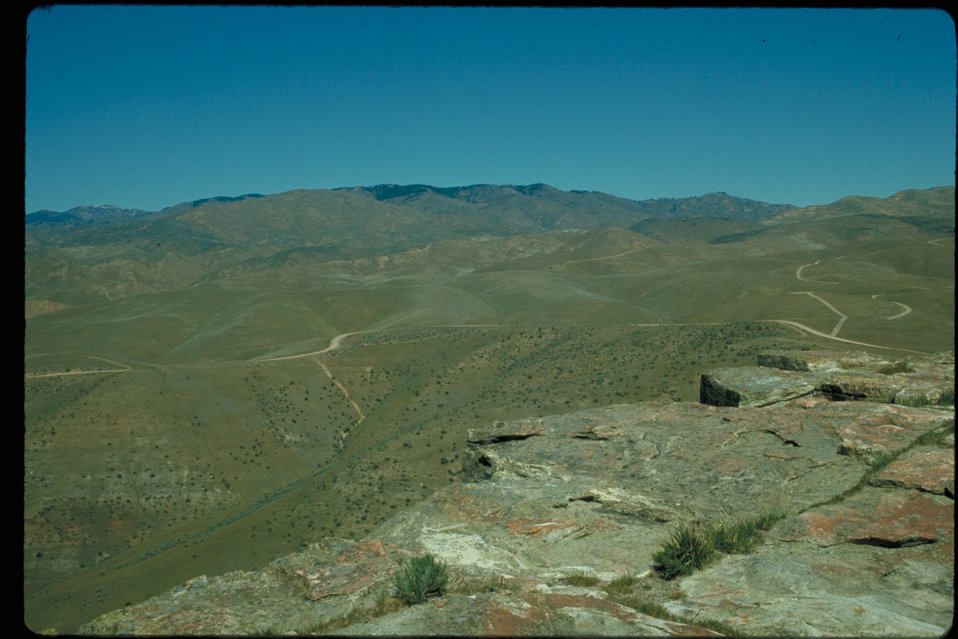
Taken from Table Rock Boise Front Four Rivers Field Office LSRD Lower Snake River District